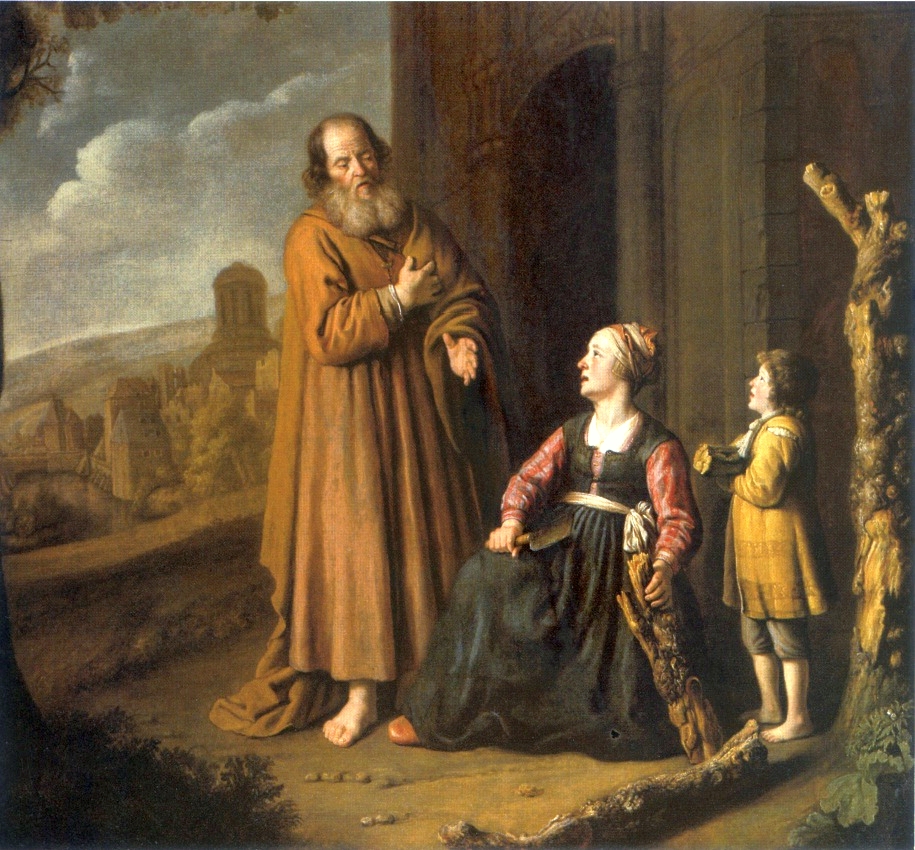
Victors Elijah and the widow of Zarephath